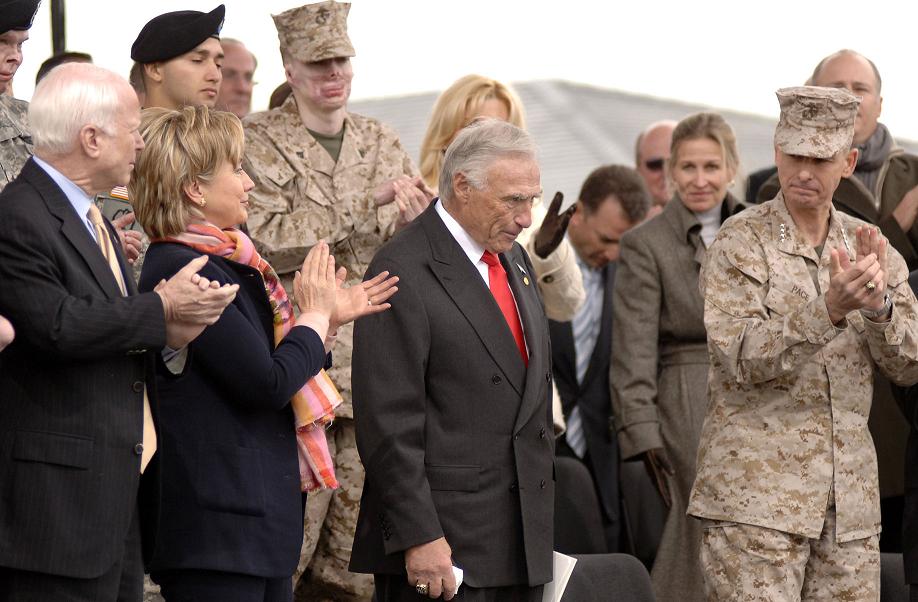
Center for Intrepid

Arnold Fisher receives a standing ovation for his efforts as the driving force behind private donations of more than $50 million to build the new Center for the Intrepid, a 65,000-square-foot rehabilitation center, and two new Fisher Houses that can house up to 42 families. More than 600,000 Americans donated to the foundation.